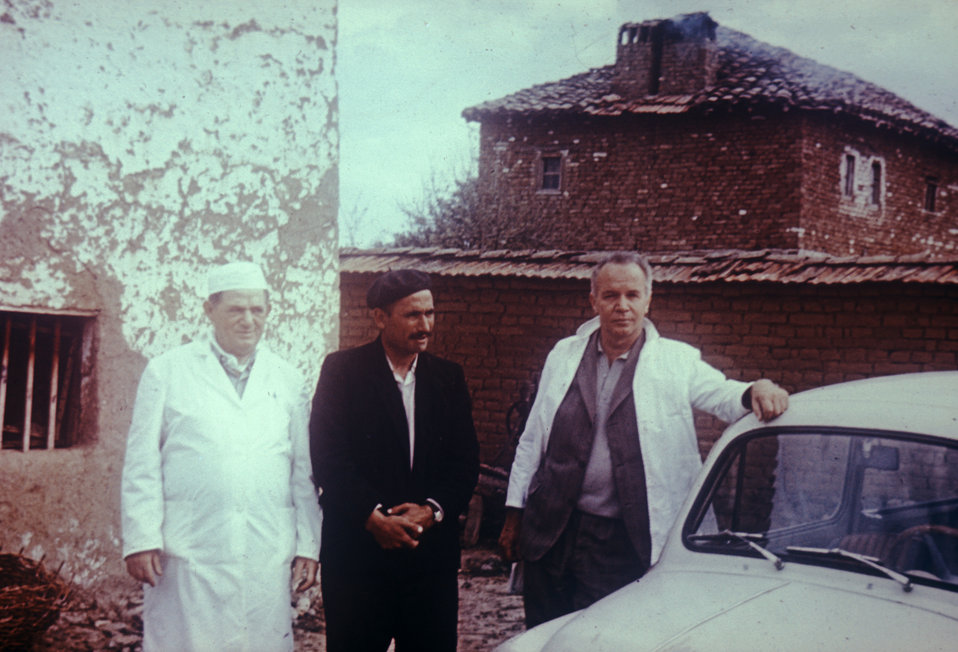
The man in the center was the 'Index case' for the smallpox epidemic in Kosovo, Yugoslavia in March and April, 1972.